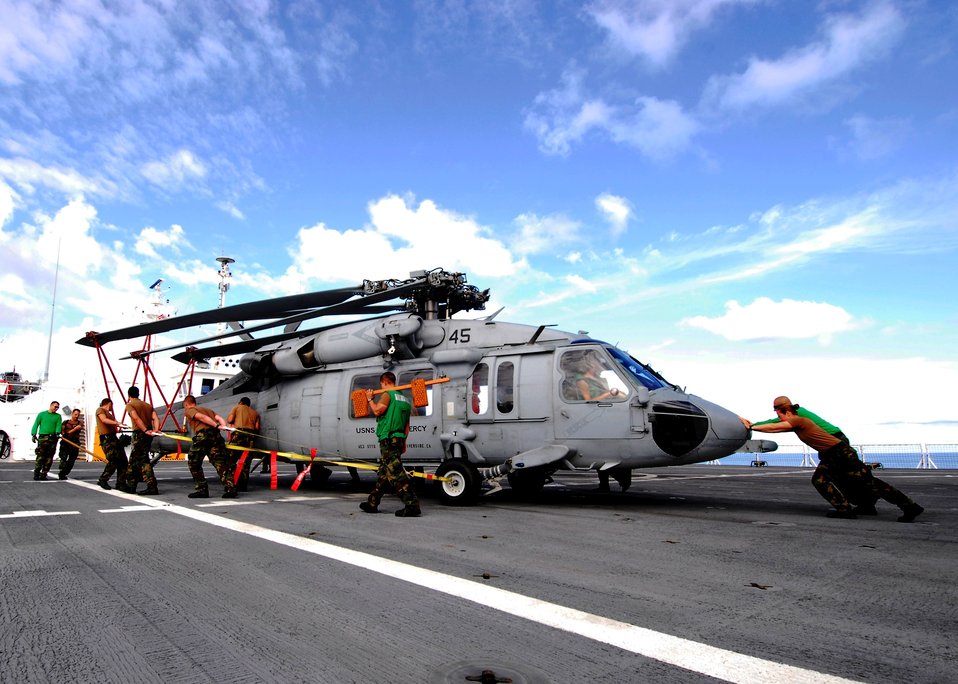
Crew members from Helicopter Sea Combat Squadron 23 “Wild Cards” pull an MH-60S Knighthawk helicopter across the flight deck of the Military Sealift Command hospital ship USNS Mercy (T-AH 19) in order to spot the aircraft for launch on July 8, 2010. Mercy is conducting Pacific Partnership 2010, the fifth in a series of annual U.S. Pacific Fleet humanitarian and civic assistance endeavors to strengthen regional partnerships.